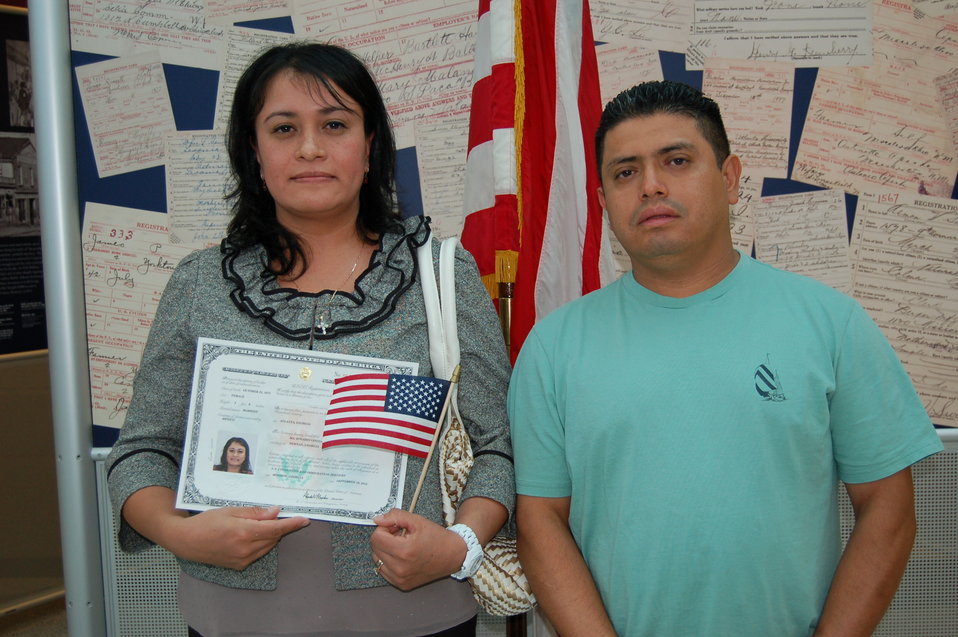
New Citizens